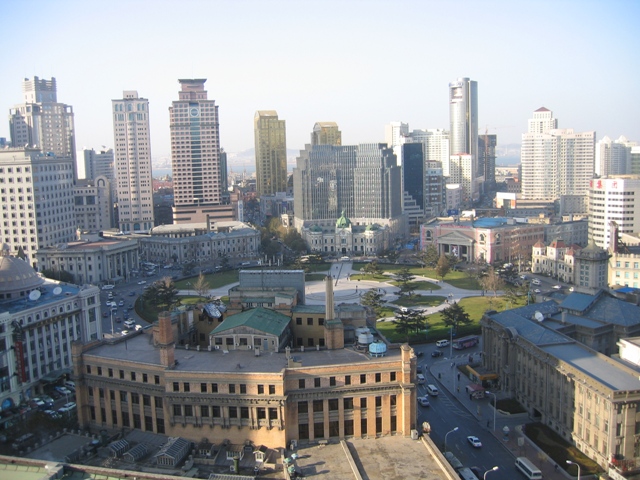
taken by author from atop the Grand Hotel, November 2004